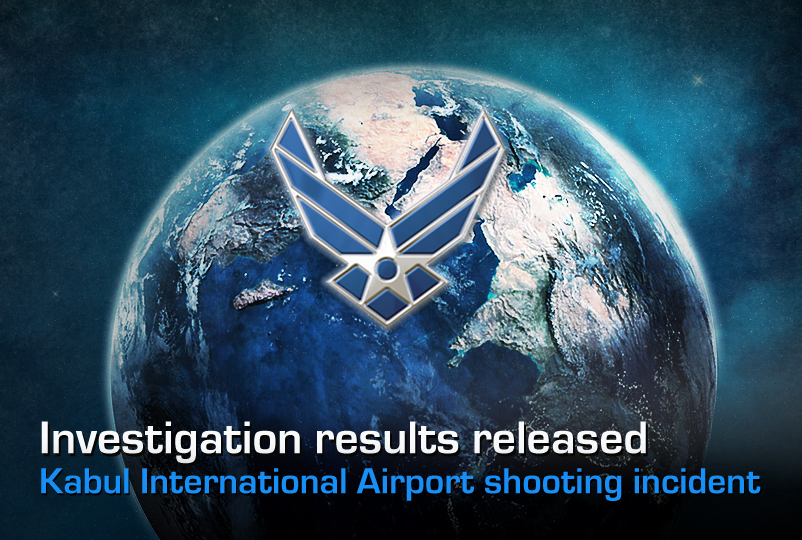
Investigation results released